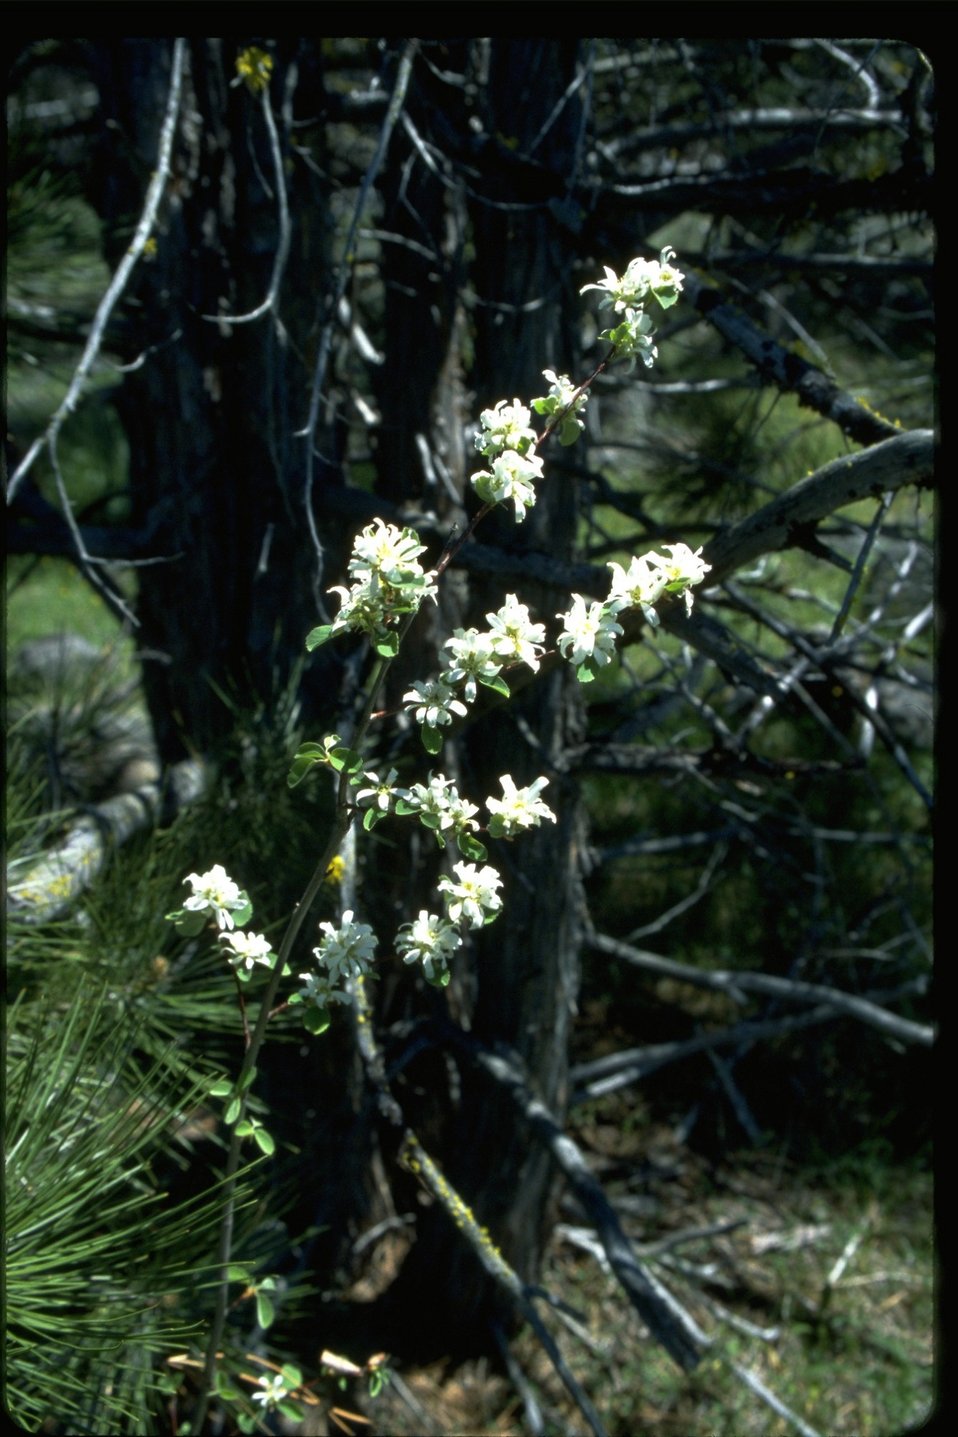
Medium shot of Service Berry wildflowers.